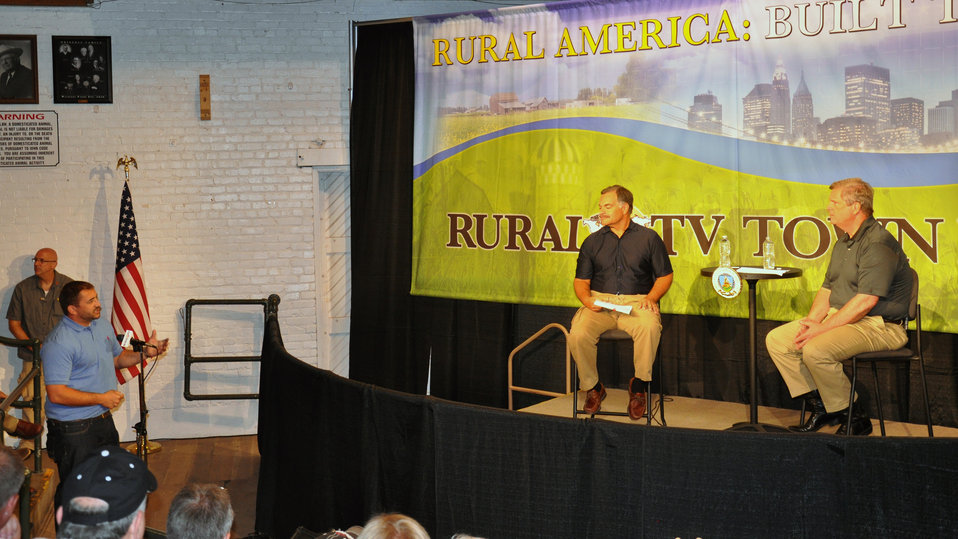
RFD-TV Host Max Armstrong (left) and Agriculture Secretary Tom Vilsack (right) held a town hall meeting on RFD-TV at the Iowa State Fair in Des Moines, Iowa, on Thursday, August 16, 2012.

The Secretary was in Iowa As part of continuing steps by the Obama Administration to assist livestock producers in response to the historic drought. USDA will utilize nearly $16 million in financial and technical assistance to immediately help crop and livestock producers in 19 states to cope with the adverse impacts of the historic drought. In addition, USDA will initiate a transfer of $14 million in unobligated program funds into the Emergency Conservation Program. These funds can be used to assist in moving water to livestock in need, providing emergency forage for livestock, and rehabilitating lands severely impacted by the drought. Together these efforts should provide nearly $30 million to producers struggling with drought conditions.Most recently, Secretary Vilsack signed disaster designations for an additional 44 counties in 12 states including Iowa as primary natural disaster areas due to damage and losses caused by drought and excessive heat.